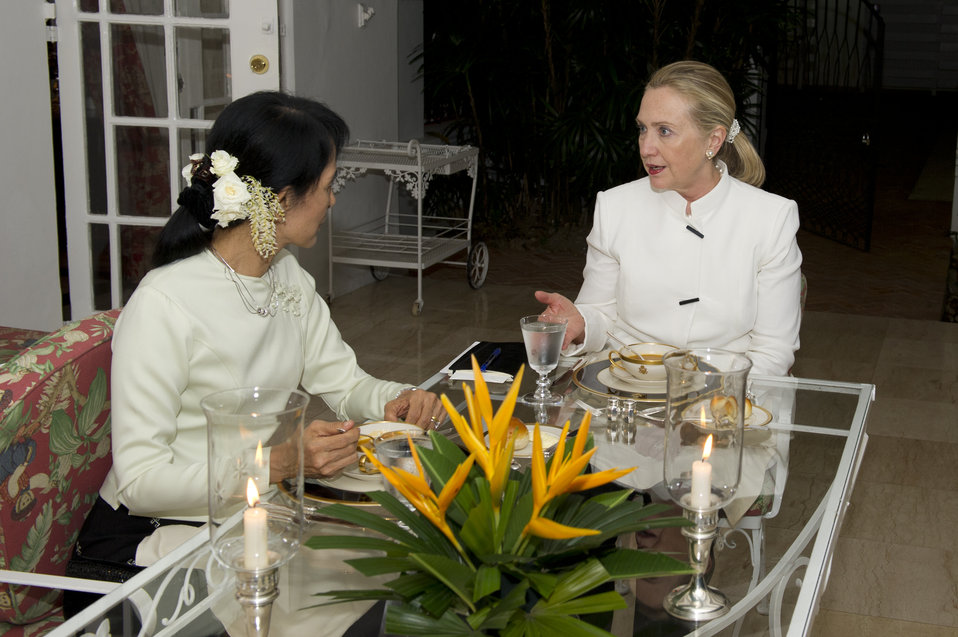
Secretary Clinton Meets With Daw Aung San Suu Kyi

U.S. Secretary of State Hillary Rodham Clinton meets with Daw Aung San Suu Kyi for dinner in Rangoon, Burma, on December 1, 2011.